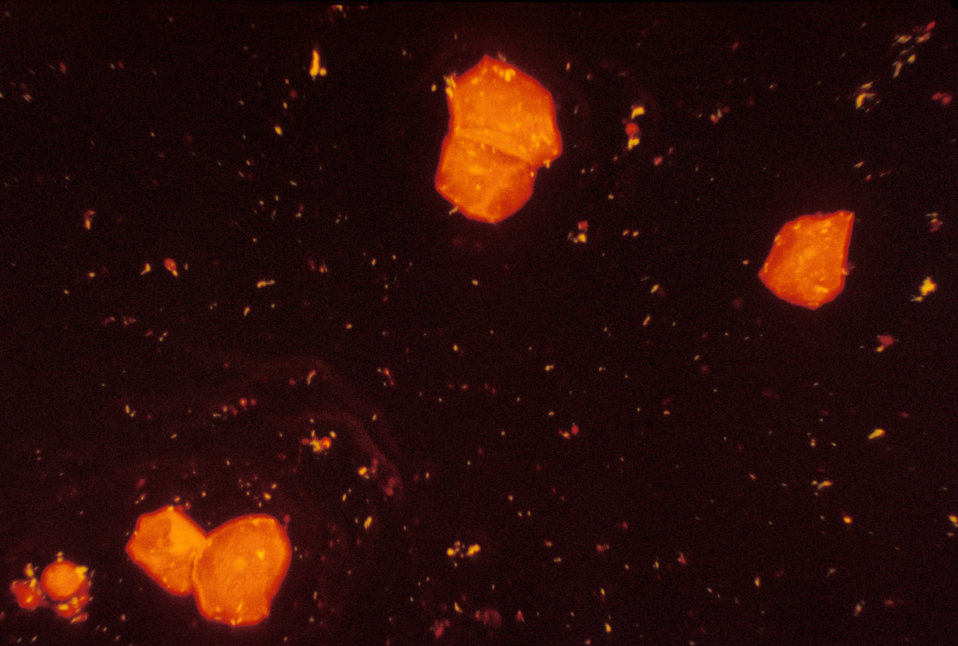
Here we see Mycobacterium tuberculosis in a sputum smear is stained using fluorescent acid-fast stain.